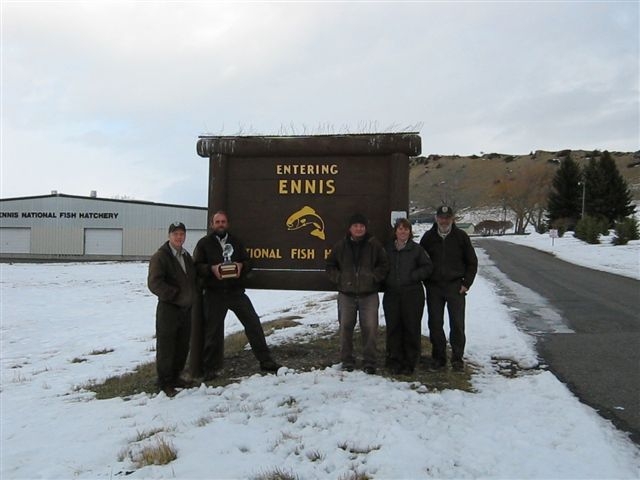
Ennis National Fish Hatchery -- 'Hatchery of the Year'

Ennis National Fish Hatchery (NFH) staff pose with award in front of the hatchery entrance sign. Ennis NFH in Montana received the 2010 Environmental Award for Fish Hatchery of the Year. They received this award because the staff recognized the need to improve the Hatchery’s technology surrounding energy consumption and had solar panels installed on hatchery grounds.